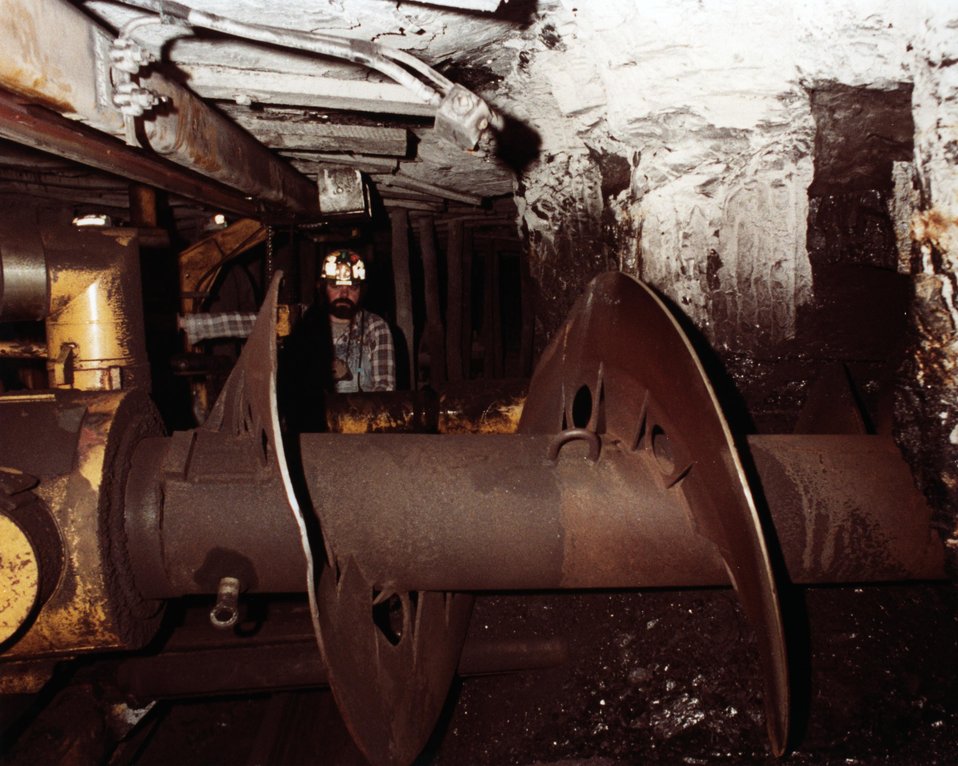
CLOSE-UP OF AUGER BIT IN OPERATION.

THE BI-DIRECTIONAL AUGER IS BEING DESIGNED TO EXTRACT COAL FROM THE NORMAL SIZE PILLARS LEFT IN ROOM-AND-PILLAR MINING. BY DRILLING INTO TWO PILLARS FROM THE SAME LOCATION, A GREAT DEAL OF THE NONPRODUCTIVE TRAMMING IS ELIMINATED. BY DRILLING MUCH SHORTER BORE HOLES THAN THE PRESENT UNIDIRECTIONAL AUGER, FEWER INTERSECTING HOLES WHICH WANDER INTO ROOF OR BOTTOM ROCK ARE EXPECTED. THE NET RESULT IS A THEORETICAL 40% MORE PRODUCTIVE MACHINE THAN THE UNIDIRECTIONAL AUGER. ALSO, CREW SIZE IS REDUCED BY ONE. PARTLY BECAUSE THE MACHINE IS REMOTELY CONTROLLED AND PARTLY BECAUSE THE AUGER SEGMENTS ARE NOT REMOVED FROM THE MACHINE, THE OPERATION IS MUCH SAFER. DRILLING INTO STANDARD SIZE PILLARS OFFERS A TRUE INCREASE IN RECOVERY.